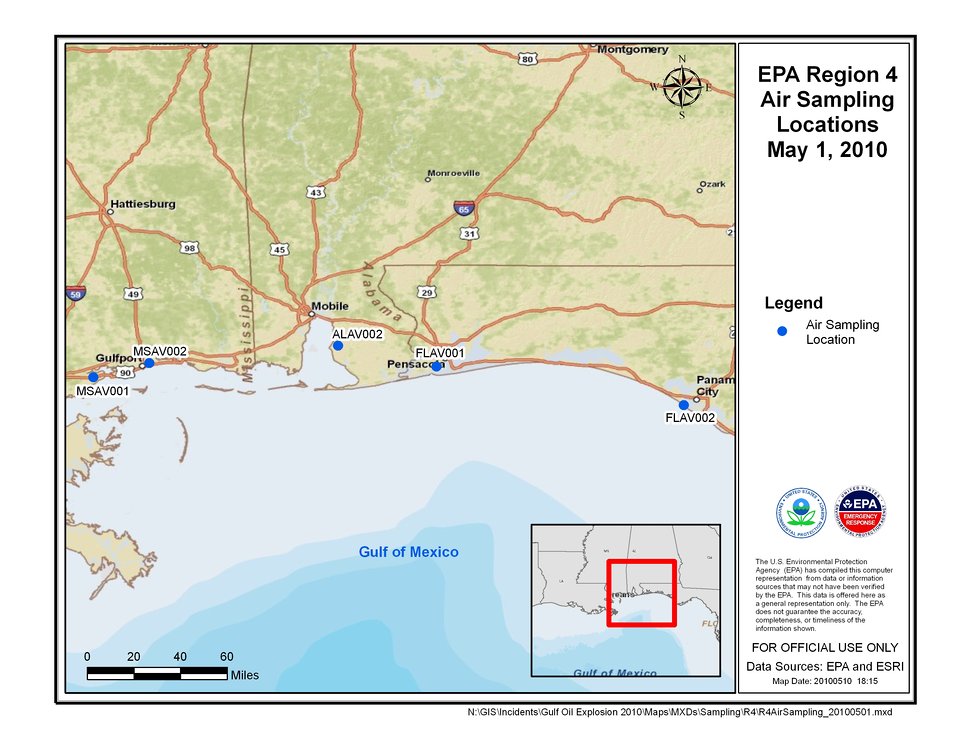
EPA Air Sampling Locations May 1, 2010